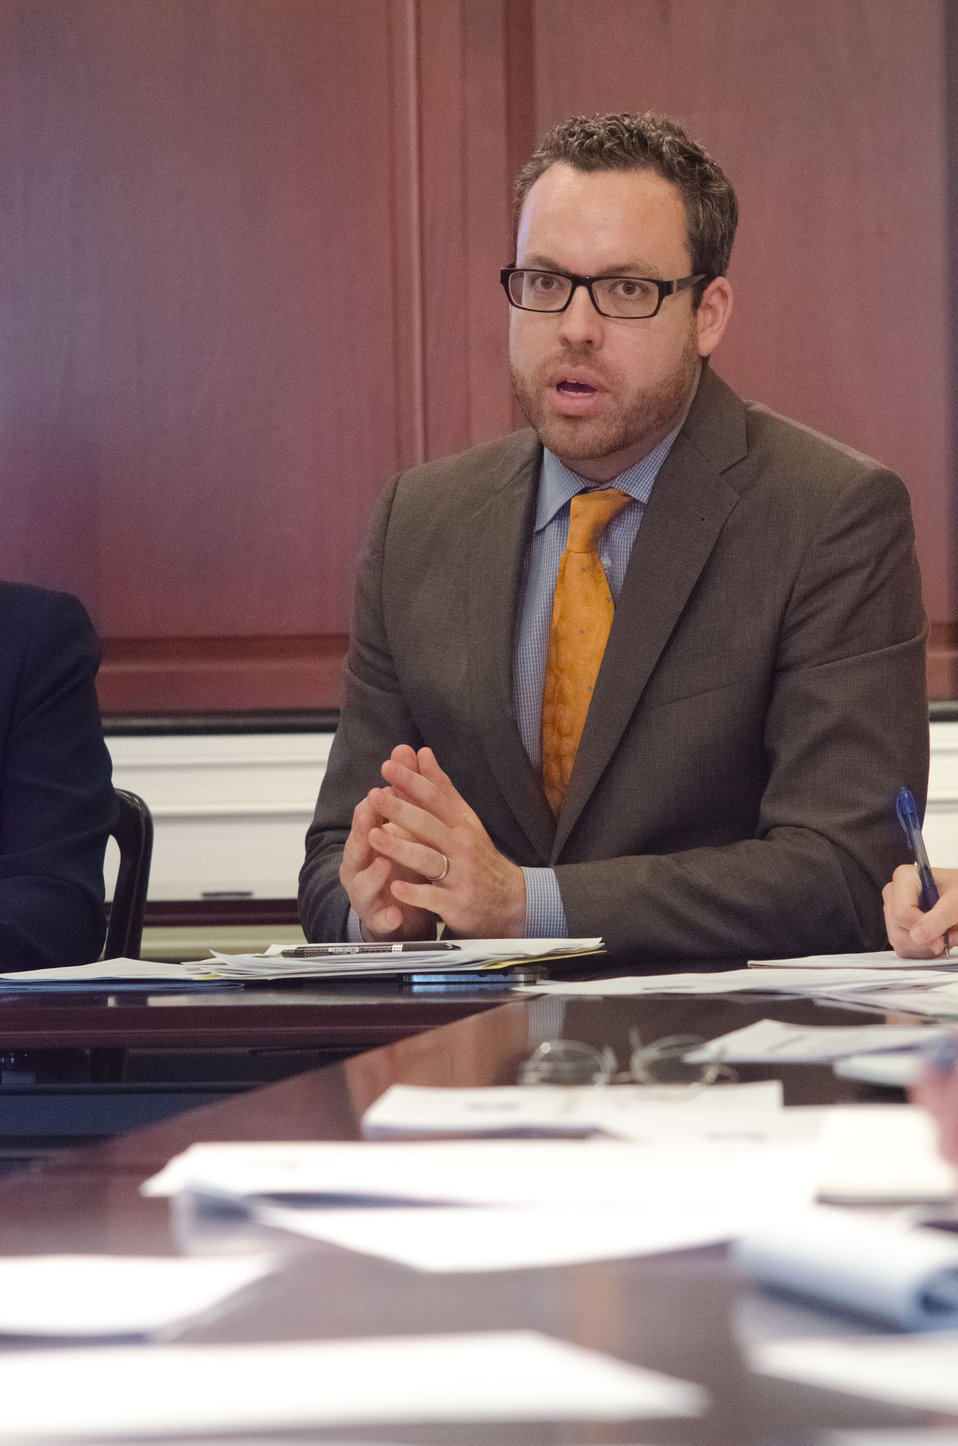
Interior Bureau of Land Management Acting Deputy Director of Programs and Policy Neil Kornze speaks during the White House Rural Council chaired by Agriculture Secretary Tom Vilsack at the White House in Washington, D.C. on Friday, Oct. 5, 2012. The White House Rural Council discusses recent White House announcements and Secretary Vilsack asked council members to outline their work plan for the coming months.